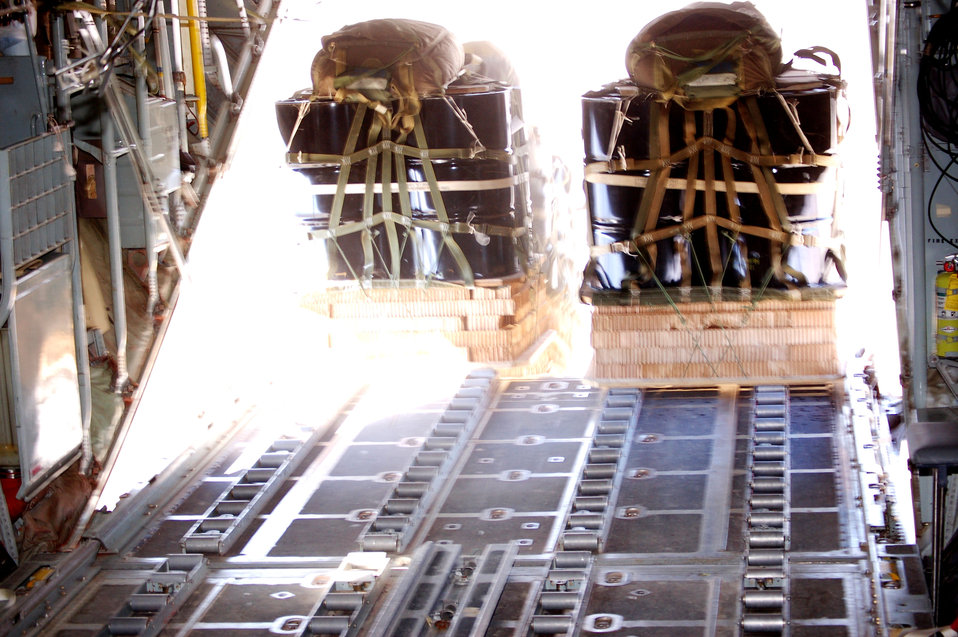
Emergency airdrop over Afghanistan sustains combat ops

Twenty-four 55-gallon drums, or 9,000 pounds of fuel, are released from a C-130 Hercules over southern Afghanistan March 13 to provide emergency resupply for coalition ground forces. The airdrop by the 774th Expeditionary Airlift Squadron from Bagram Air Base helped to sustain the combat operations of the 1st Battalion of the 508th Parachute Infantry Division against Taliban extremists.